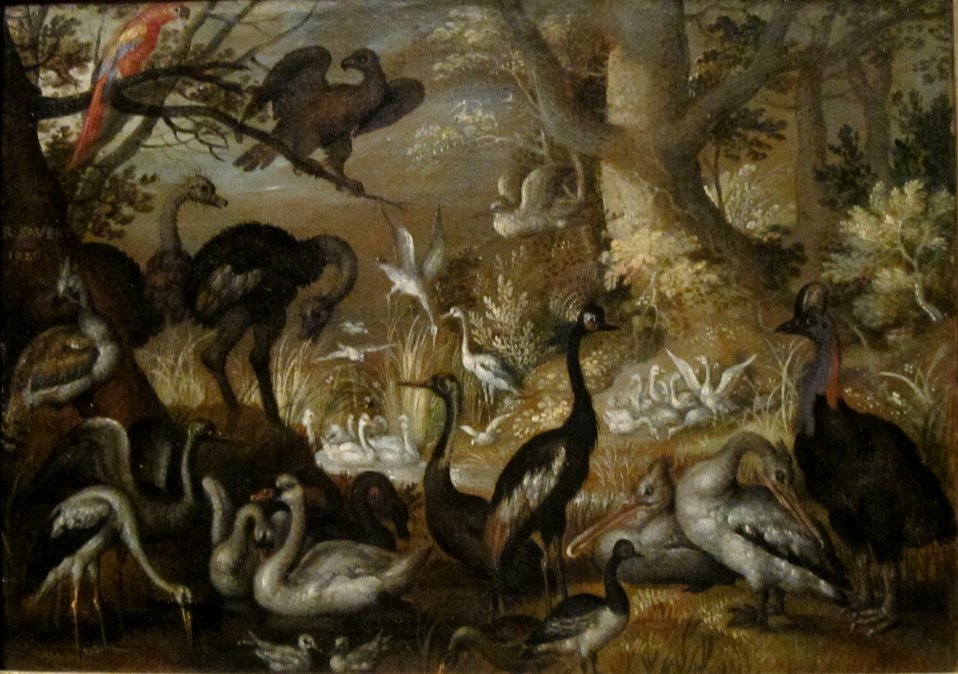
Landscape with Birds, oil painting by Roelant Savery, 1620, Dayton Art Institute